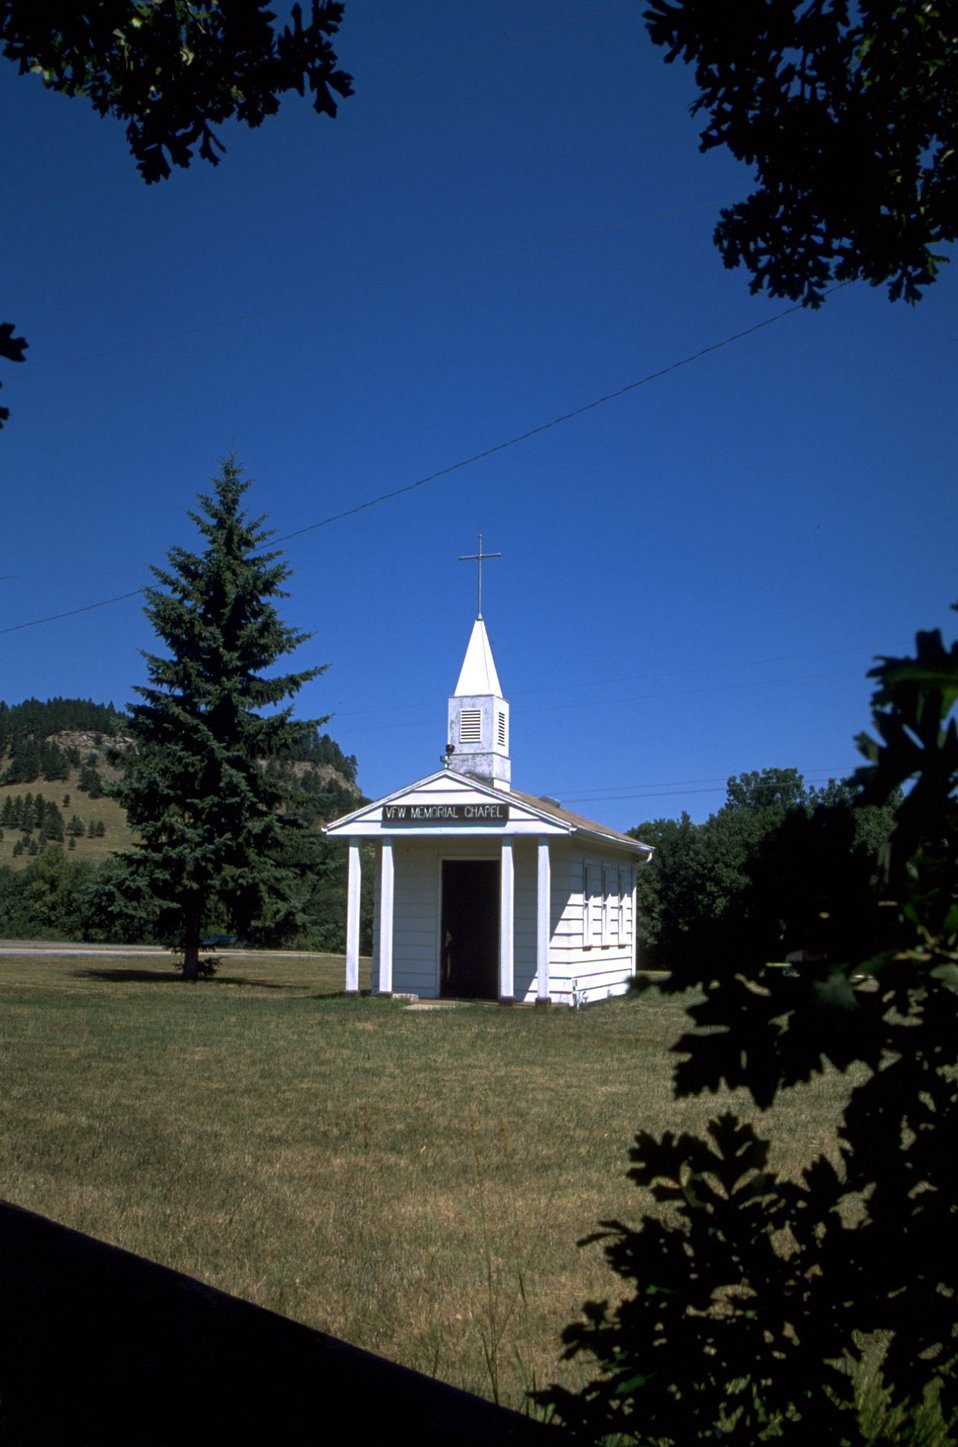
Veterans of Foreign Wars Chapel at Fort Meade (Vertical)